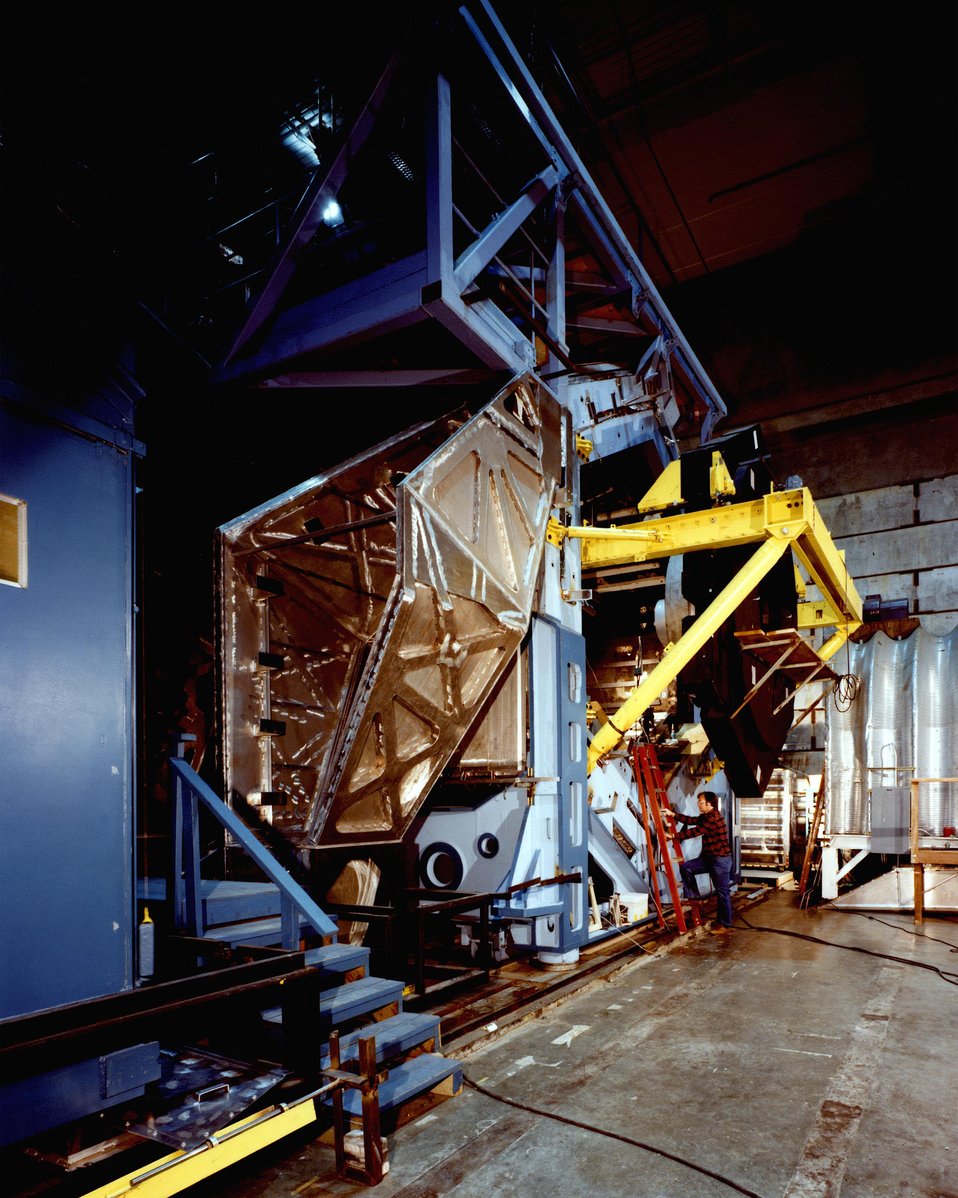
THE TIME PROJECTION CHAMBER'S HEXAGONAL FRAME WITH CABLE TRAYS AND END DOOR IN POSITION.

THE POSITRON-ELECTRON PROJECT (PEP) IS A JOINT UNDERTAKING OF STANFORD LINEAR ACCELERATOR CENTER (SLAC) AND THE LAWRENCE BERKELEY LABORATORY (LBL). THE PEP MACHINE IS DESIGNED TO STORE BEAMS OF ELECTRONS AND POSITRONS CIRCULATING IN OPPOSITE DIRECTIONS AT SINGLE-BEAM ENERGIES BETWEEN 4 GEV AND 18 GEV. THE SOURCE OF THE BEAMS WILL BE THE PRESENT SLAC ACCELERATOR. THE COUNTER-ROTATING BEAMS OF ELECTRONS AND POSITRONS WILL COLLIDE WITH EACH OTHER AT SIX POINTS IN THE MACHINE. THESE COLLISION OR BEAM-INTERACTION POINTS WILL BE USED FOR HIGH-ENERGY PHYSICS EXPERIMENTS.